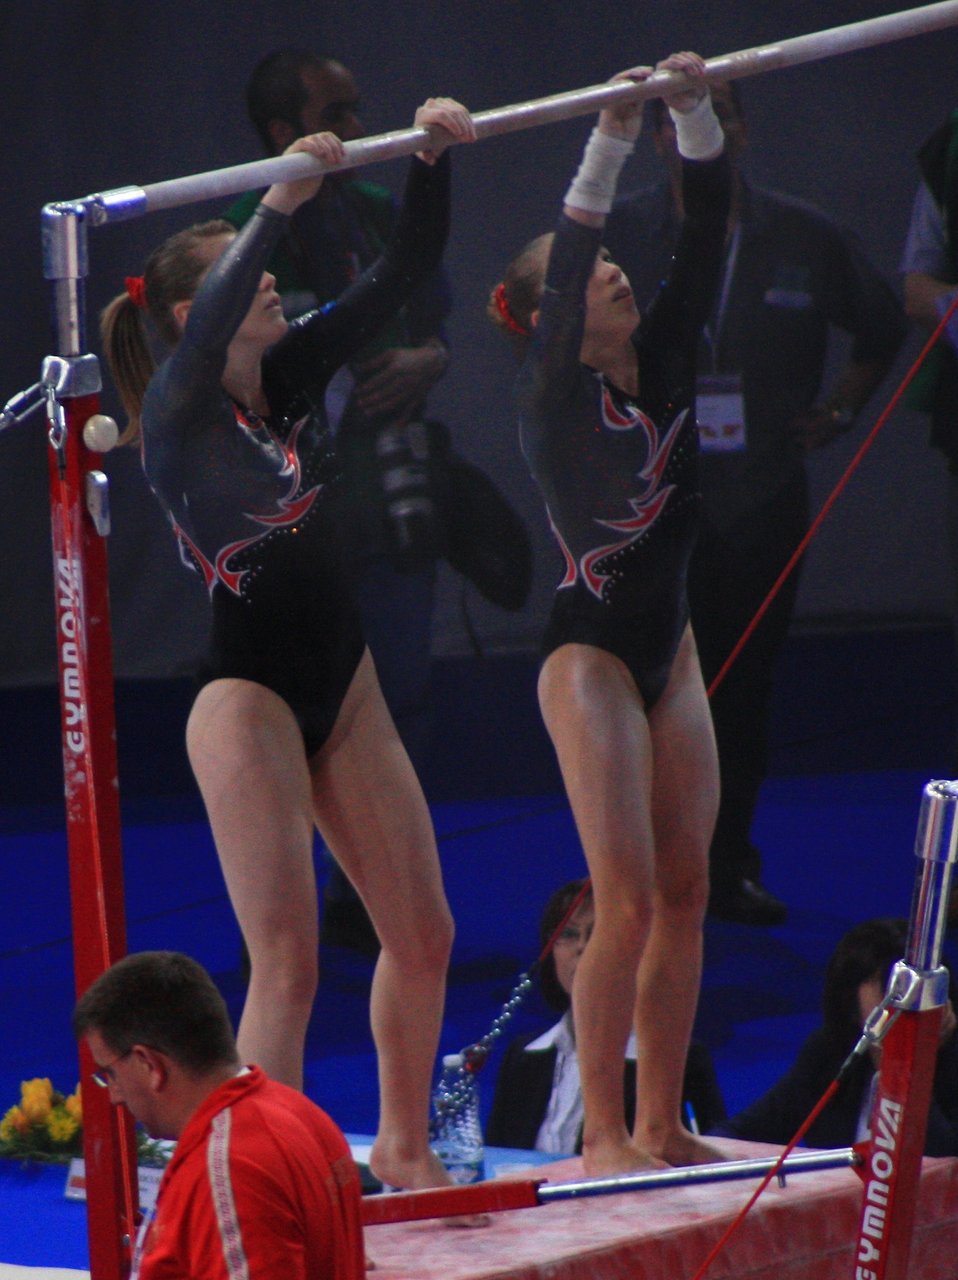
Fran√ßais†: Deux gymnastes russes pr√©parant les barres asym√©triques avec de la magn√©sie avant leur passage, en qualifications des 17e Internationaux de France en 2010.